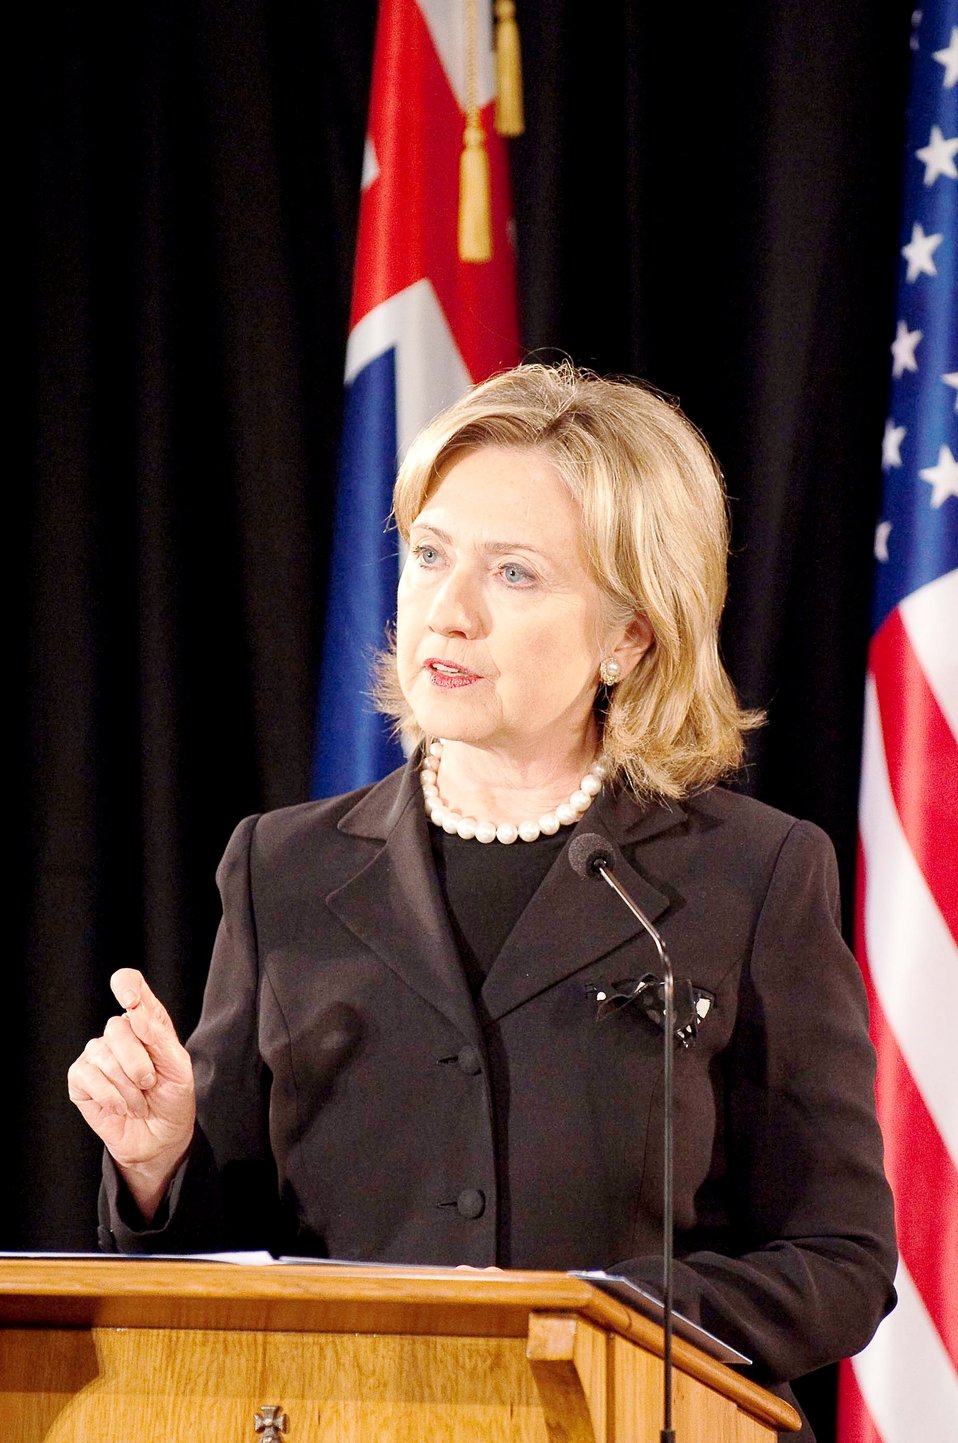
Secretary Clinton Speaks During a Joint Press Availability

U.S. Secretary of State Hillary Rodham Clinton speaks during a a joint press availability with New Zealand Prime Minister John Key, in Wellington, New Zealand, on November 4, 2010.